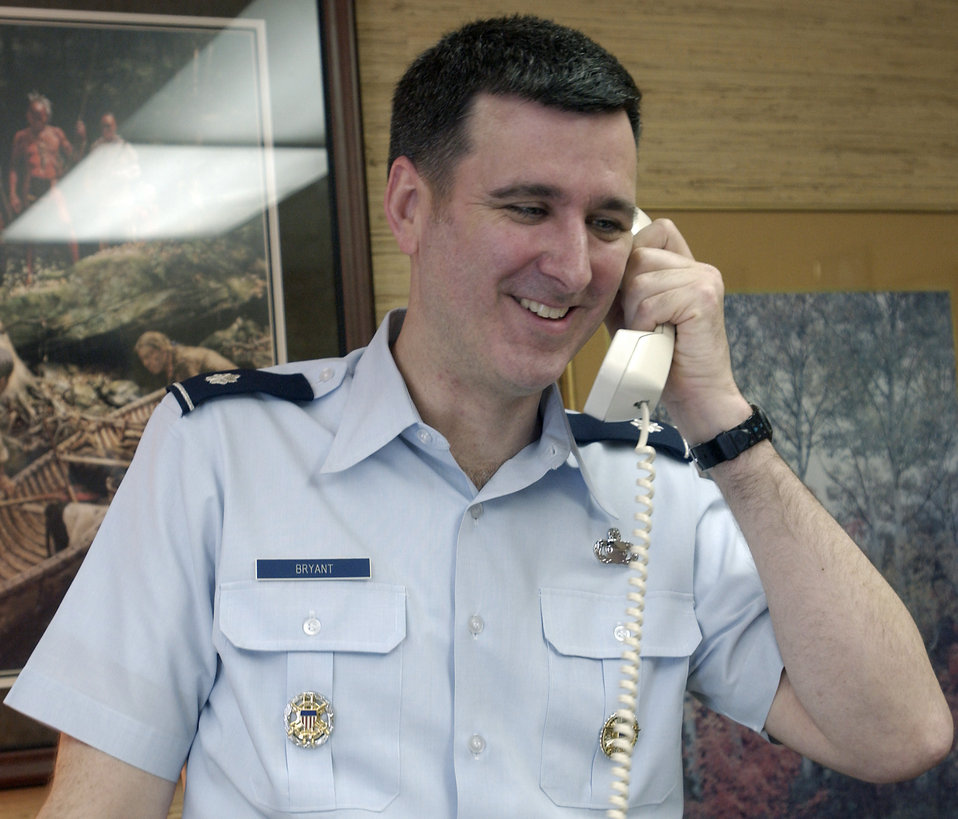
Technology unites Airmen in matrimony

MCCLEAN, Va. -- Lt. Col. Michael Bryant talks to his new bride, Maj. Heather Villasenor, after their phone marriage April 26. Colonel Bryant is the Joint Staff target operations chief in Washington, and Major Villasenor is a senior intelligence duty officer at a forward-deployed location in Southwest Asia.